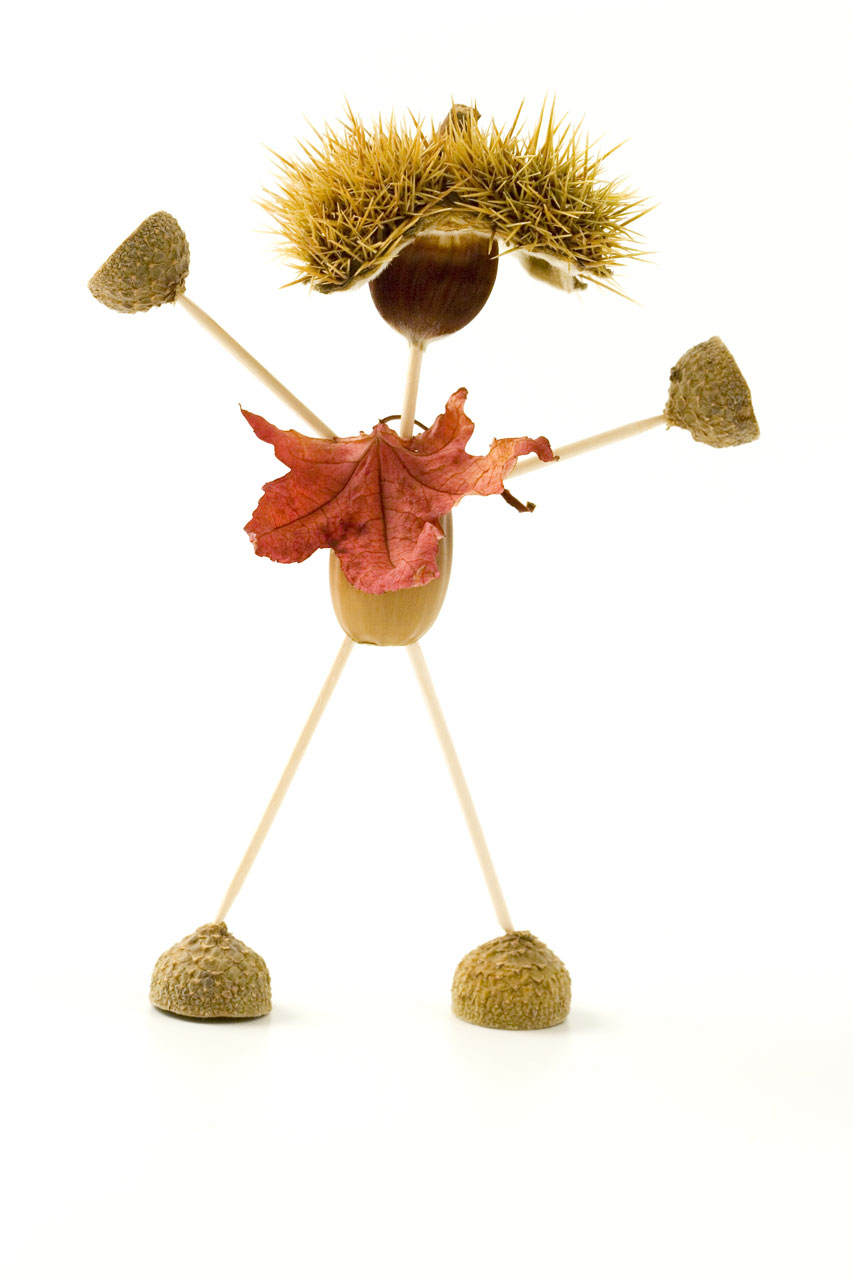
Acorn figure on white background.